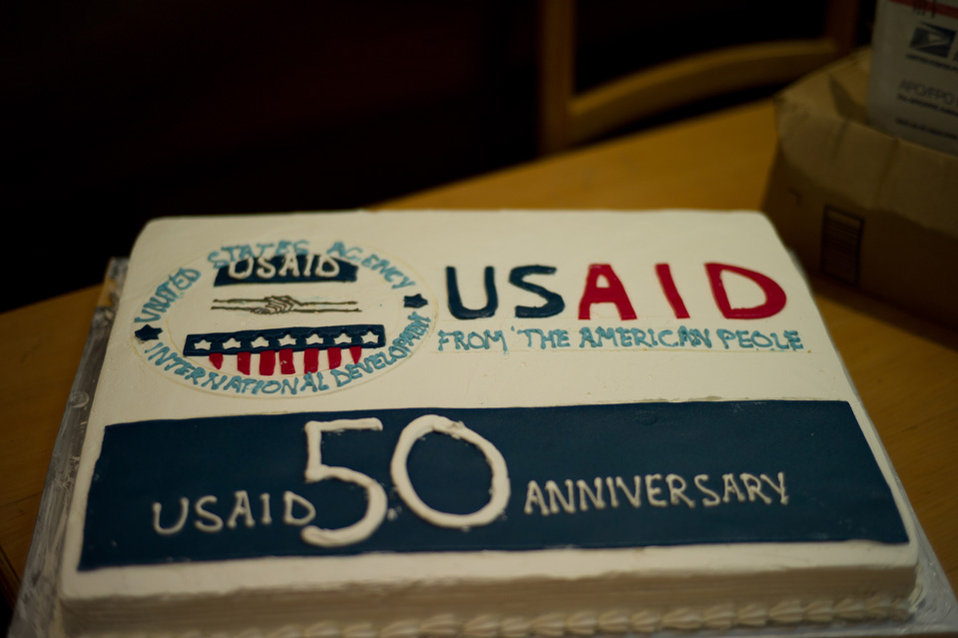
From the American People